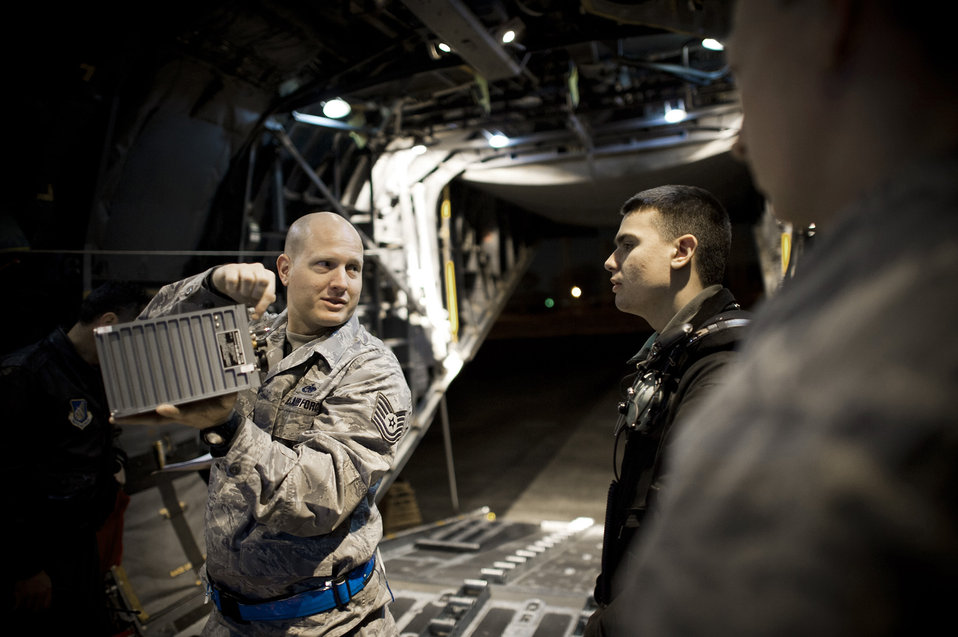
Maintainers keep C-130s flying to supply Operation Tomodachi

Tech. Sgt. Douglas Harper mentors Airmen about the differences between a receiver-transmitter and a generator control unit March 14, 2011, at Yokota Air Base, Japan. C-130s play a crucial role in disaster-relief operations because of their ability to land on dirt runways and other less-than-ideal landing conditions. Sergeant Harper is crew chief assigned to the 374th Aircraft Maintenance Squadron.